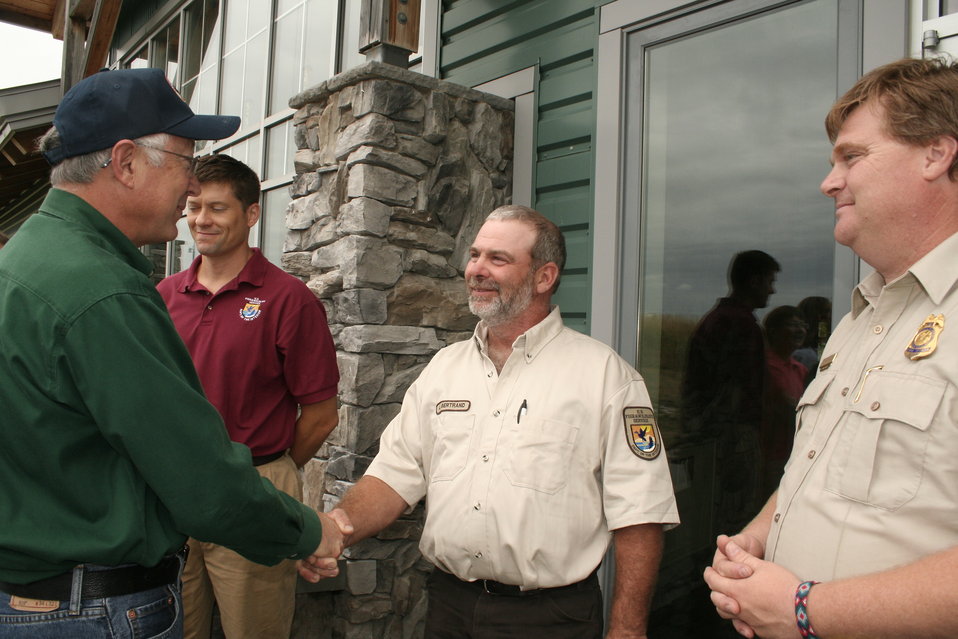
USFWS employees greet Secretary Salazar

USFWS greet Department of Interior Secretary Salazar.